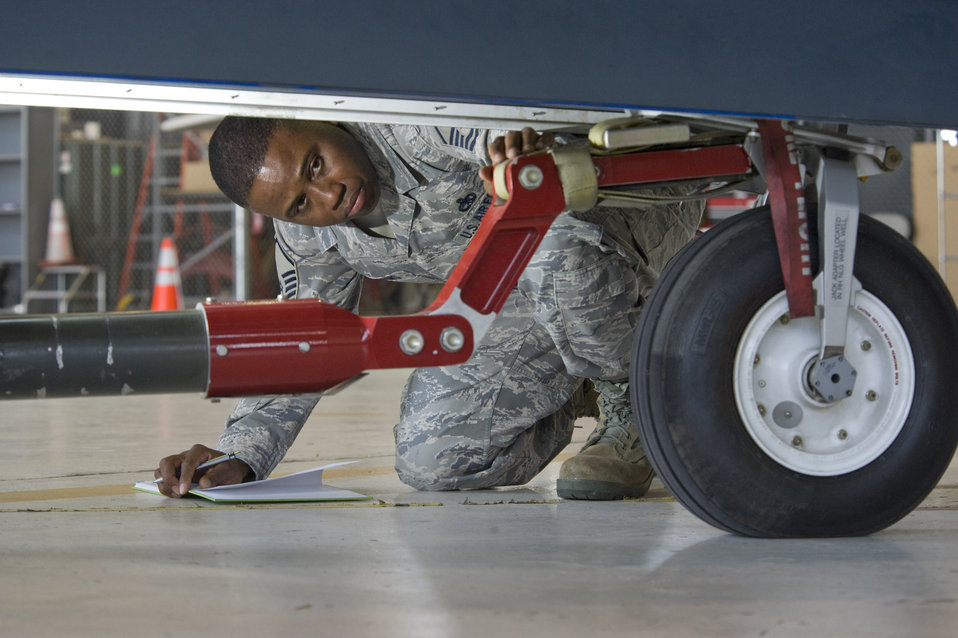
Safe Handling

Master Sgt. Gregory Williams inspects a strap added to a tow bar based on a safety recommendation. Sergeant Williams is the Global Hawk suitability manager with the Air Force Operational Test Evaluation Center at Edwards Air Force Base, Calif.